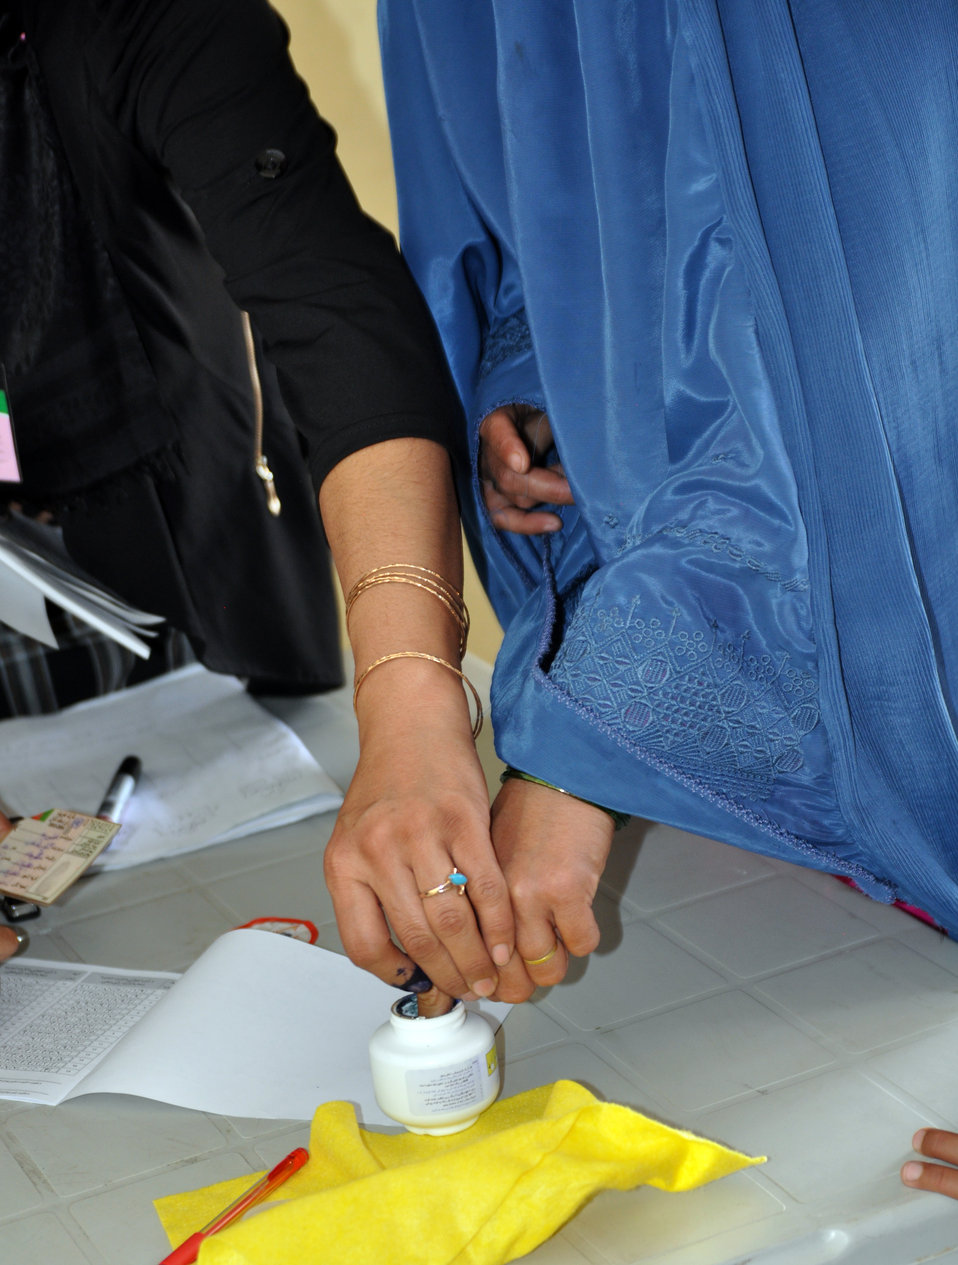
A woman inks her finger at a polling center in Kabul.